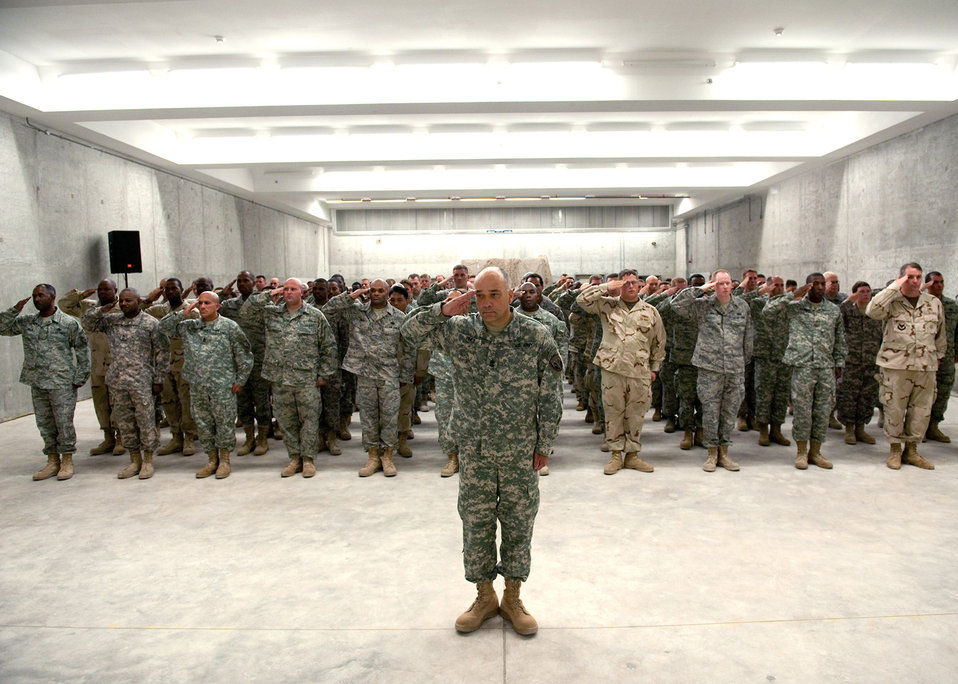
Special Ops Command Central opens new headquarters

Military members of Special Operations Command Central render honors during the playing of the national anthem at a ribbon-cutting ceremony for the new SOCCENT main headquarters July 29 in Southwest Asia. SOCCENT officials plan, prepare and direct special operations missions in support of operations Iraqi Freedom and Enduring Freedom.